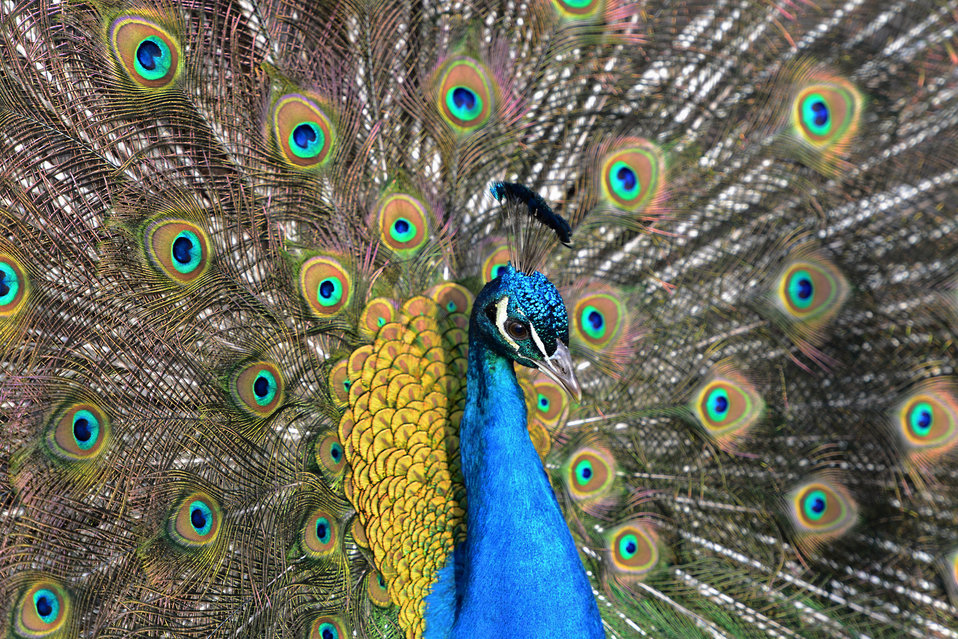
Peafowl

Pavo cristatus l..